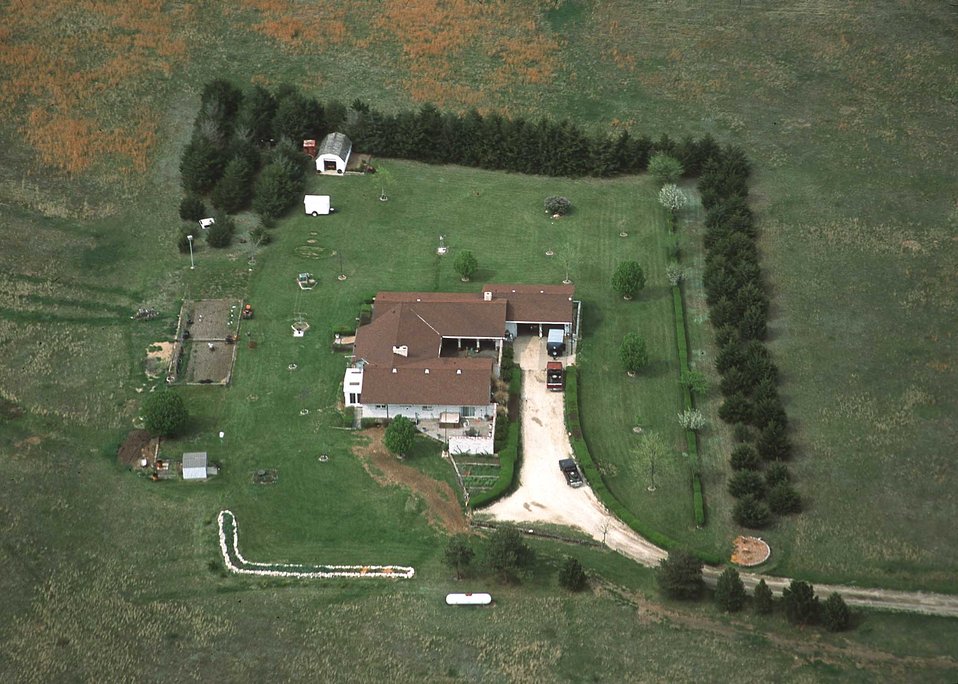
Aerial view of farmstead windbreaks. Kansas.